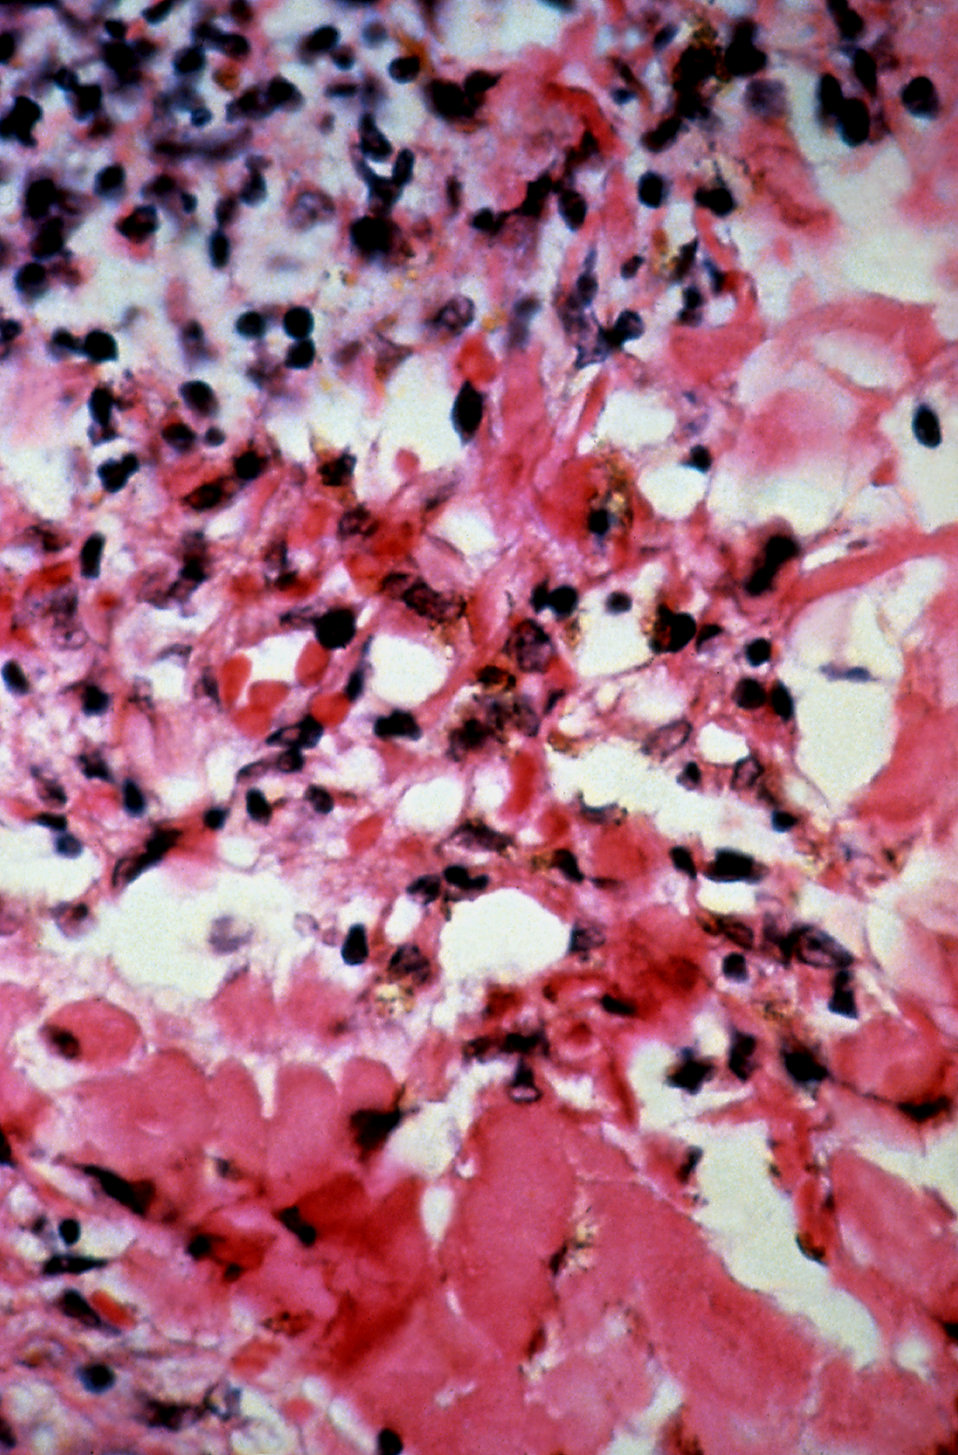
This micrograph depicts the histopathologic changes found in the case of Kaposi's sarcoma lesions.